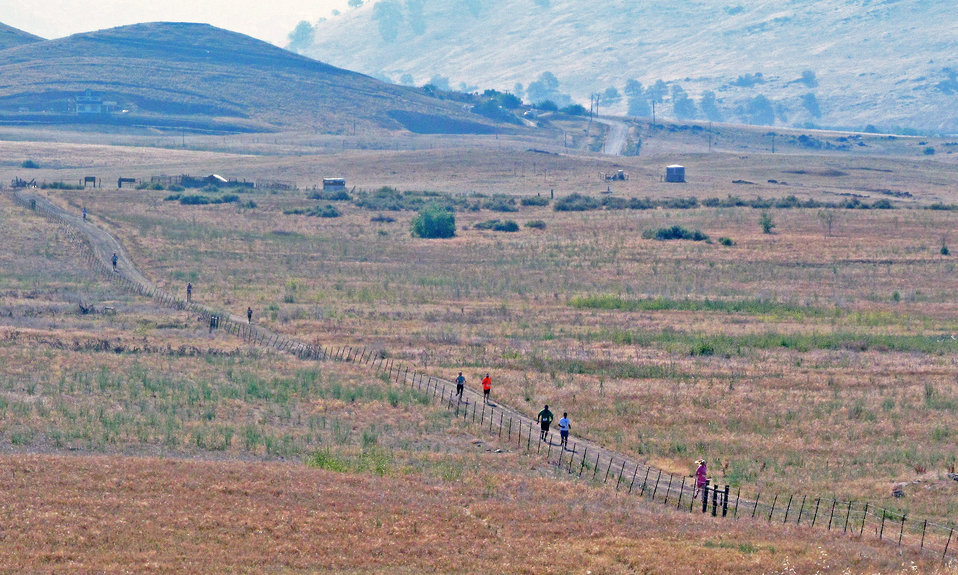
Success Lake hosts first-ever 5K trail run

Runners make their way along a dirt trail at the first-ever 5K trail run at the U.S. Army Corps of Engineers Sacramento District’s Success Lake near Porterville, Calif., May 10, 2014. The Corps partnered with the City of Porterville Parks and Leisure Department and MaxFit Studios to host the event, which brought in 43 runners and walkers.